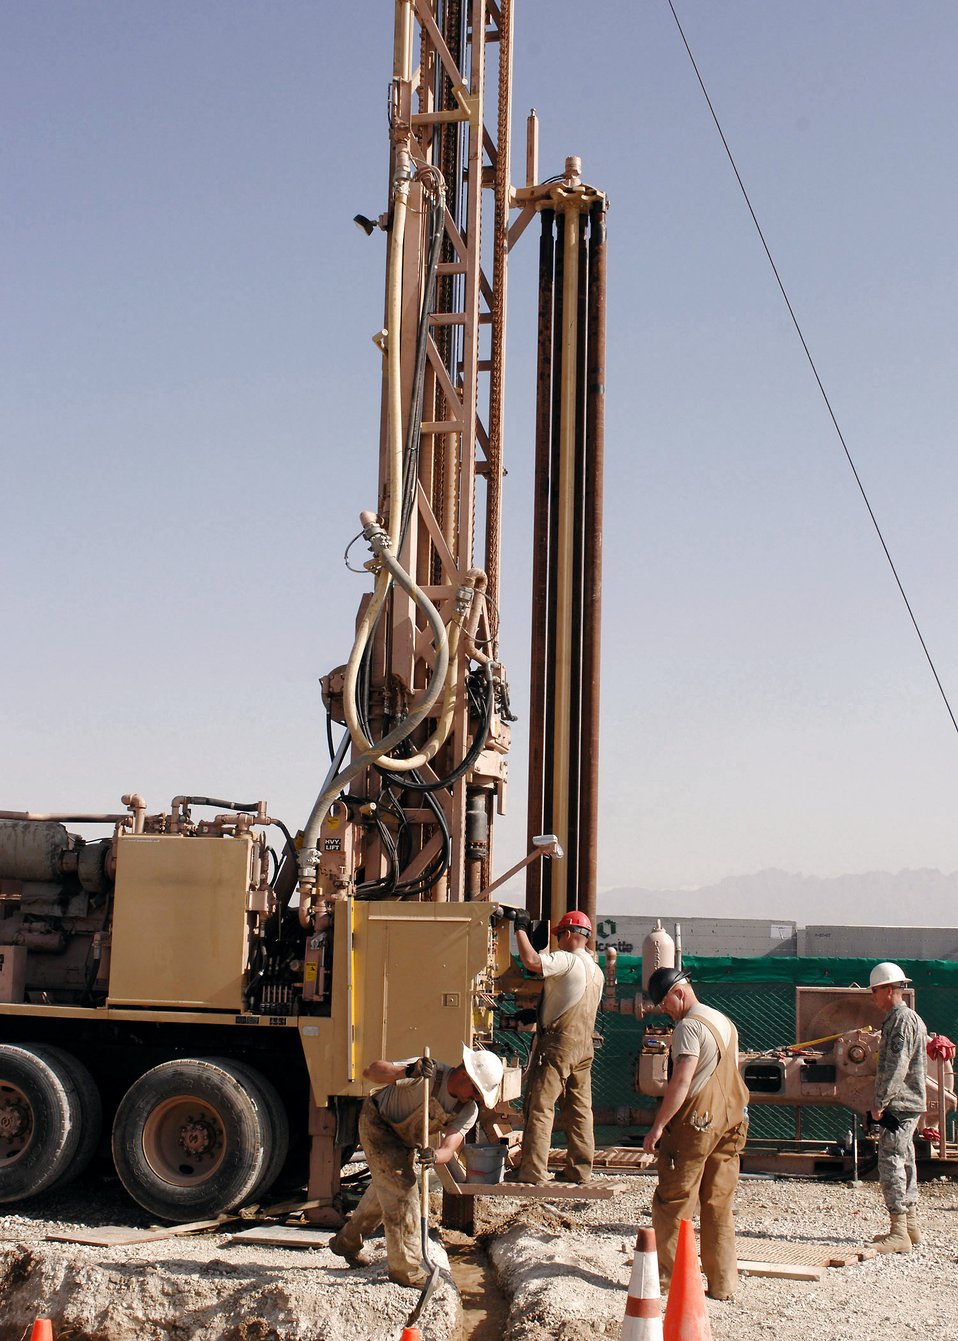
Determination, ingenuity prevail for Bagram Airmen

Airmen from the 819th RED HORSE Squadron drill a test hole to operationally check a water-well digging rig March 21 at Bagram Air Base, Afghanistan. More than $400,000 of damage to the rig was repaired at a cost of $80.